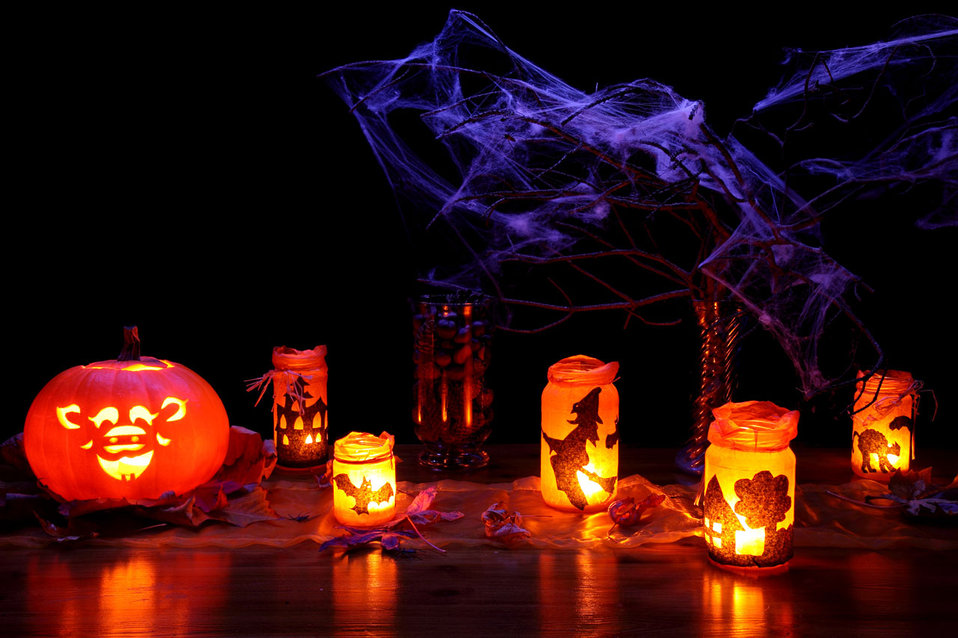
Halloween theme photo.